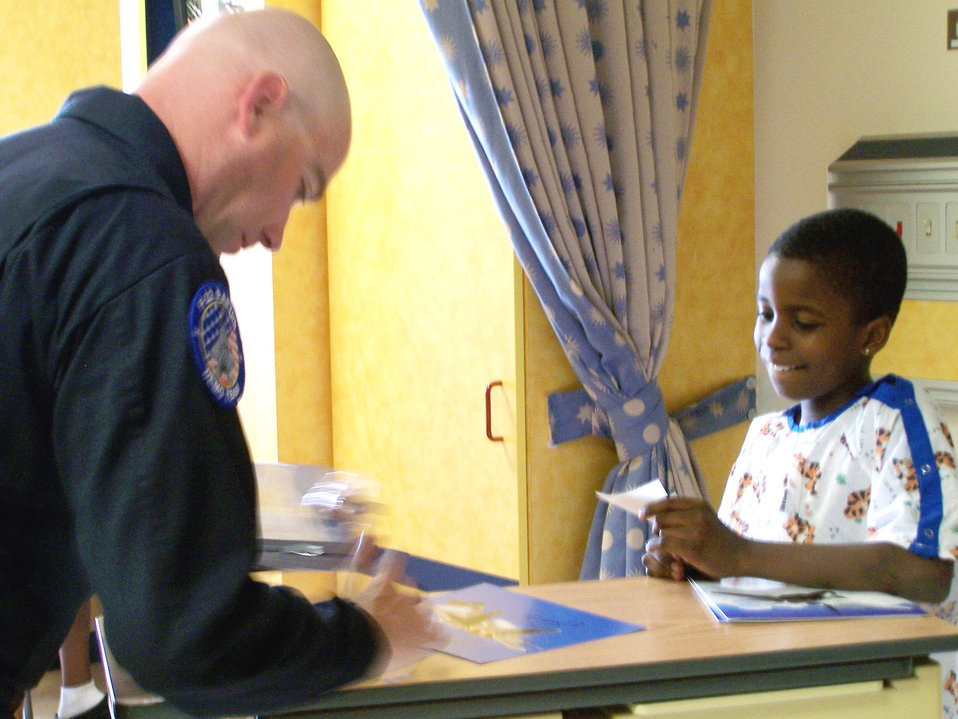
F-22 demo team inspires at children's hospital

Master Sgt. Tim Green, F-22 Raptor demonstration team superintendent, signs lithographs for patients at La Rabida Children's Hospital in Chicago Aug. 15.